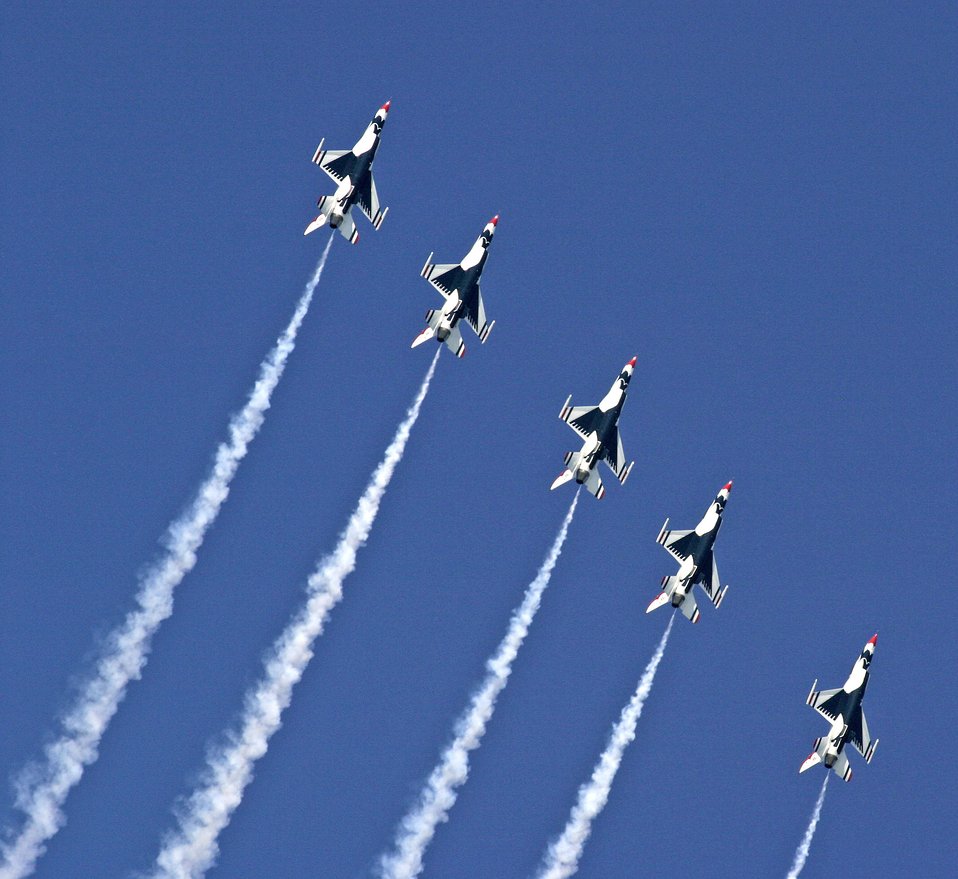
Milwaukee air show

F-16 Fighting Falcons of the U.S. Air Force Air Demonstration Squadron, the Thunderbirds, perform a climbing turn at an air show in Milwaukee on July 15.